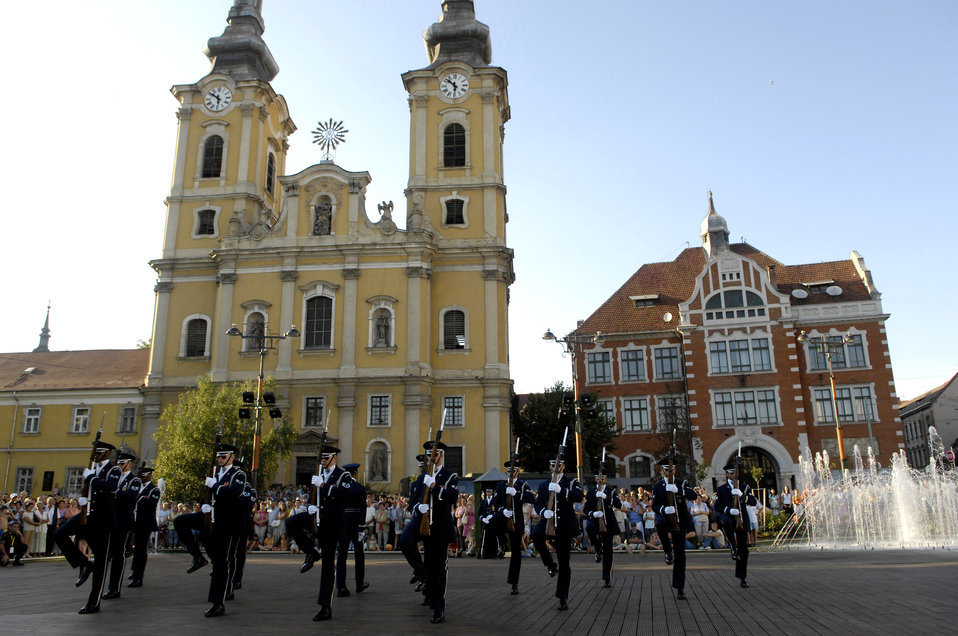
Air Force precision in Hungary

Members of the U.S. Air Force Honor Guard Drill Team headline the international Regimentfest armed forces showcase in Miskolc City, Hungary, July 28. The team performed their 16-person routine at the Hungarian Tomb of the Unknown Soldiers. They are visiting three countries across central Europe.